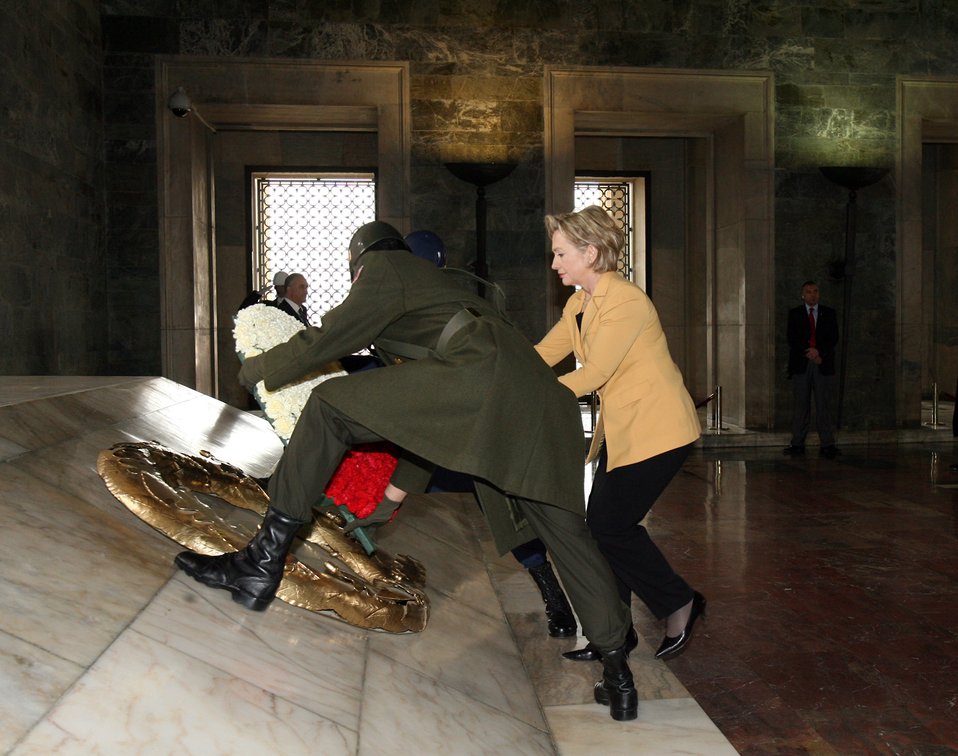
Secretary Clinton Lays Wreath at Tomb of Turkish Republic’s Founder

U.S. Secretary of State Hillary Rodham Clinton lays wreath at Anitkabir – the tomb of the Turkish Republic’s founder, Mustafa Kemal Ataturk at Anitkabir, Ankara, Turkey March 7, 2009.